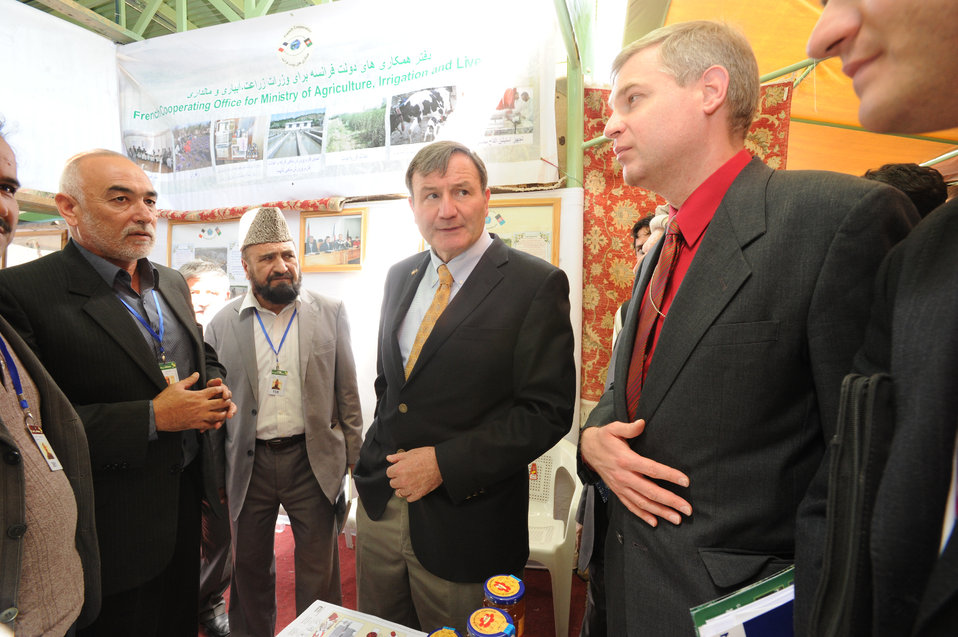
International Agricultural Fair Showcases Afghanistan's Growing Agriculture Sector

Kabul, Afghanistan | October 6, 2010 – U.S. Ambassador Karl Eikenberry, Minister Asif Rahimi and Deputy Minister Mr. Saleem Khan Kunduzi of the Ministry of Agriculture, Irrigation and Livestock (MAIL) celebrated the opening of the International Agricultural Fair at Badam Bagh Farm in Kabul today. Over the next two days, the fair will draw thousands of visitors from Afghanistan and around the world.

The International Agricultural Fair will host 136 Afghan and 40 international venders, showcasing the country’s crown jewels of agriculture, such as grapes, pomegranates, dried fruits, nuts, cashmere, and other high value crops and agricultural services.

“Afghanistan’s progress in the agriculture sector is helping lead this proud nation along the pathway to development and self sufficiency by helping feed the Afghan people, opening markets, and stimulating economic growth and investment opportunities,” lauded Ambassador Eikenberry.

USAID, in collaboration with MAIL, has sponsored 13 Agricultural Fairs since 2007 to encourage trade and generate business opportunities in the agricultural industry. These fairs help participants forge new business relationships in Afghanistan’s growing agriculture sector. They also bring together hundreds of producers, buyers, packagers, cold storage technology companies, equipment vendors, international representatives, and government agencies to facilitate stronger business linkages and partnerships. Seminars, presentations, and demonstrations will share knowledge and best practices for increasing agricultural production.

This year’s participants include importers, exporters, wholesalers, retailers, producers, input suppliers, and service providers from throughout Afghanistan as well as from countries including the United States, China, Germany.